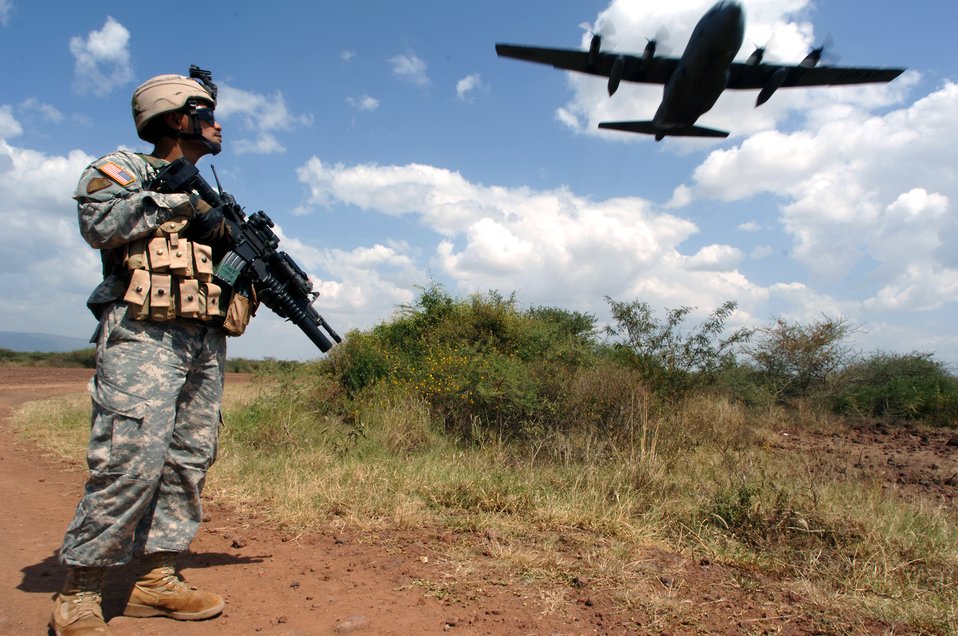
HOA 'Flex' mission

Guam Army National Guardsman Specialist Vince Fejeran was part of a detail providing security on the ground as a C-130 Hercules flies a low altitude pass on it's way back to Camp Lemonier, Djibouti after delivering passengers and cargo to a 4,500-foot dirt strip runway in southern Ethiopia. The C-130 is deployed from Elmendorf Air Force Base, Alaska. Twice a week, C-130's fly cargo and passengers from the Combined Task Force - Horn of Africa headquarters in Djibouti to remote contingency operating locations throughout Ethiopia and Kenya.